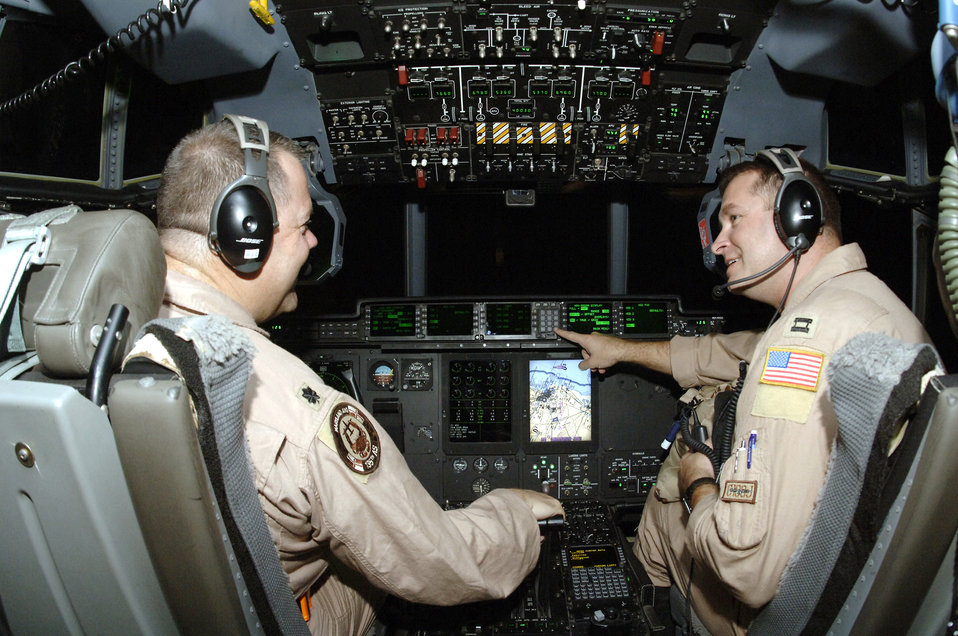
Airmen continue the 746th Expeditionary Airlift Squadron mission

Lieutenant Col. Tim Robins and Capt. Frank Noe, both of the 746th Expeditionary Airlift Squadron, discuss their evening's flight plans.